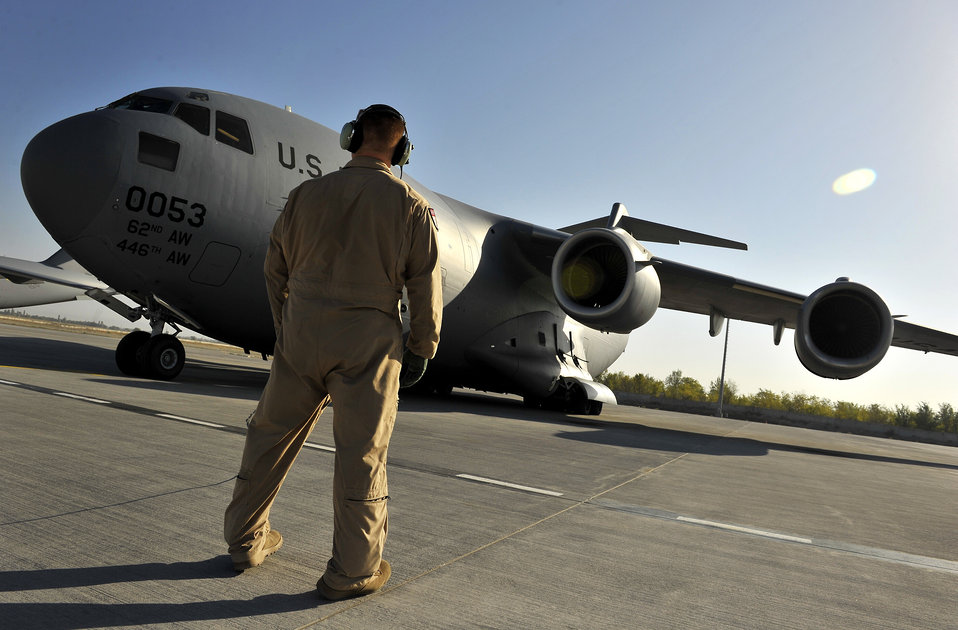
A man and his bird

Staff Sgt. James Harp performs engine start-up procedures with the onboard crew during a redeployment mission headed for Afghanistan, Sept. 11, 2012. Harp is a C-17 Globemaster III loadmaster, currently part of the 817th Expeditionary Airlift Squadron, deployed to the Transit Center at Manas, Kyrgyzstan.